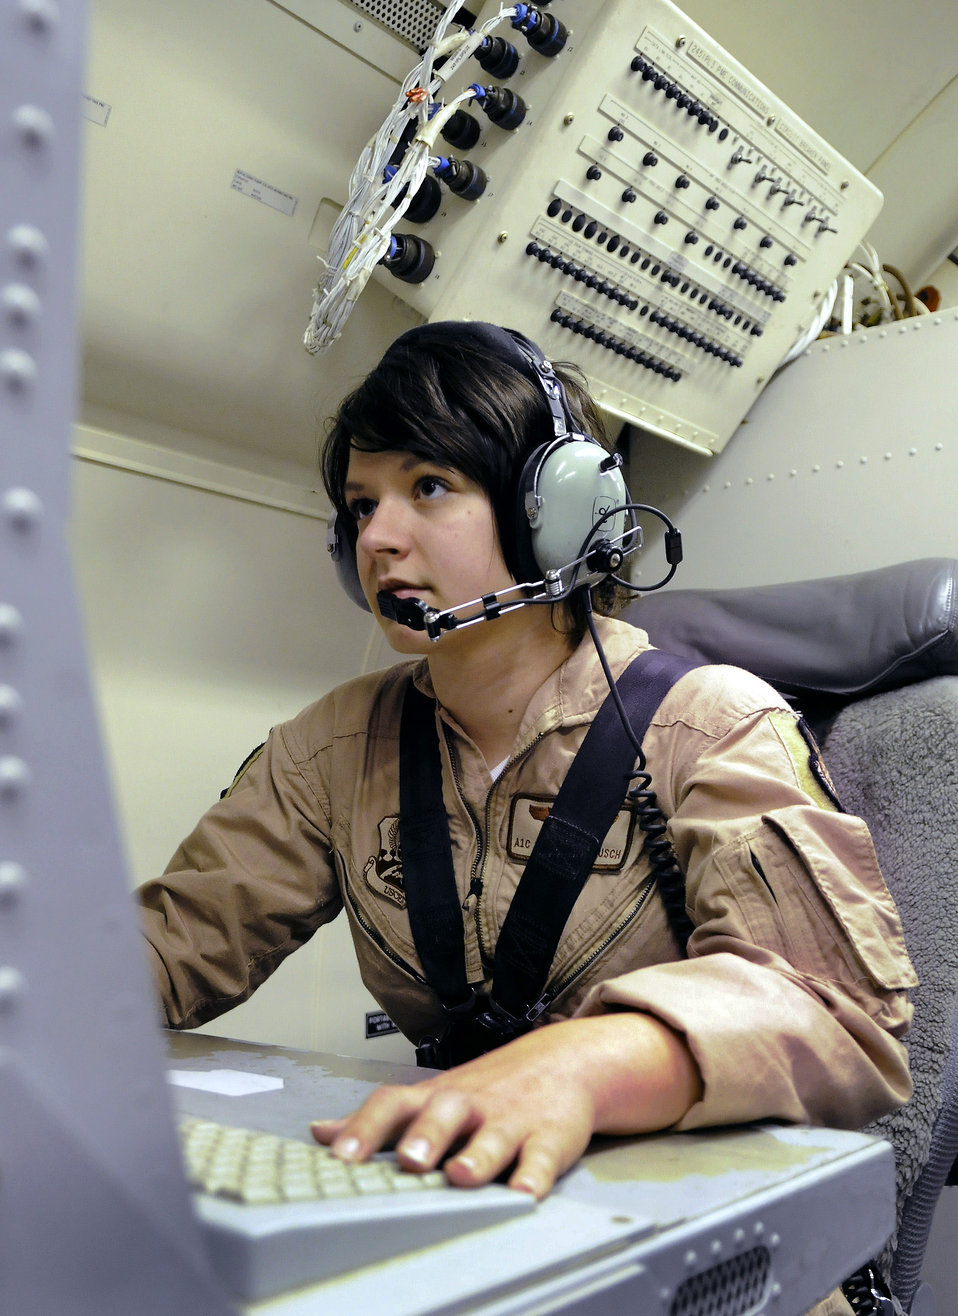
Airmen in sky give warriors on ground situational awareness

Airman 1st Class Sarah Mattausch troubleshoots radar issues Jan. 7 at an air base in Southwest Asia. Airman Mattausch is a an airborne radar technician assigned to the 7th Expeditionary Airborne Command and Control Squadron. She is a native of Valleyford, Wash., and is deployed from Robbins Air Force Base, Ga.